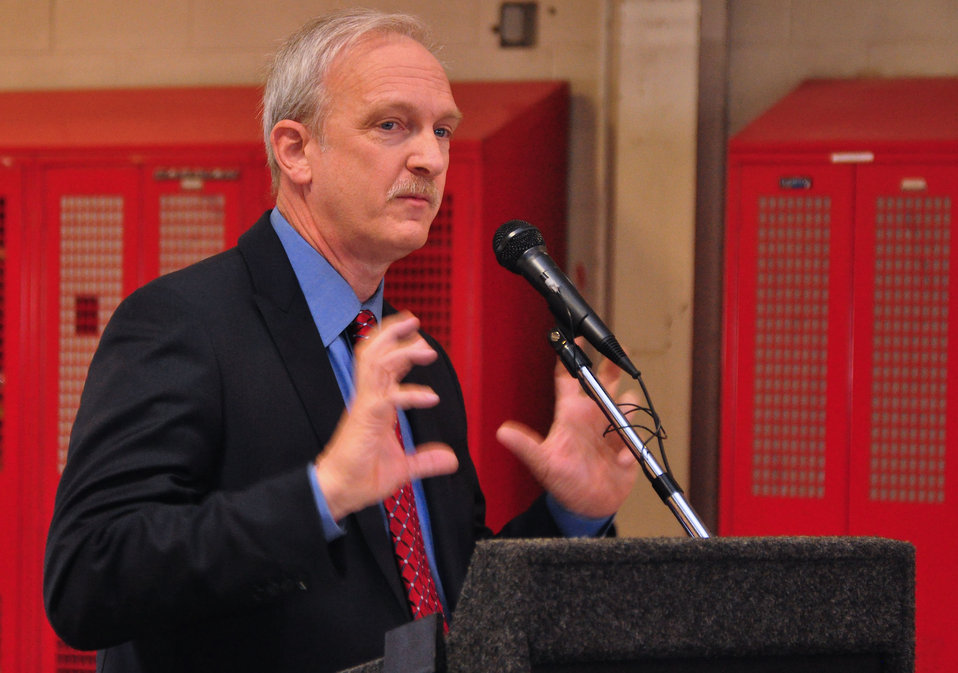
Last Part of K-25 Coming Down Oak Ridge 2013

13-157-1 DOE photo Lynn Freeny 12-19-2013 Dave Huizenga DOE Senior Advisor for EM Oak Ridge Tennessee